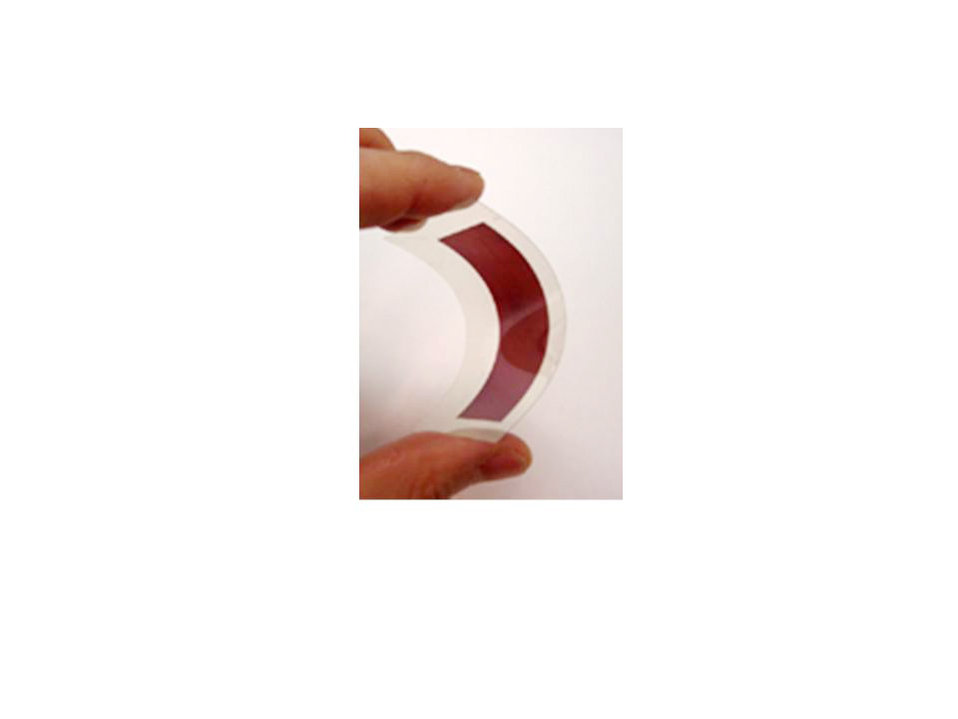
Research officials study energy harvesting for future unmanned aircraft

Research officials from the University of Washington are working on dye-sensitized solar cells, which are expected to power Air Force unmanned aircraft in the future because they are an optimum energy harvesting source that may lead to longer flight times without refueling.